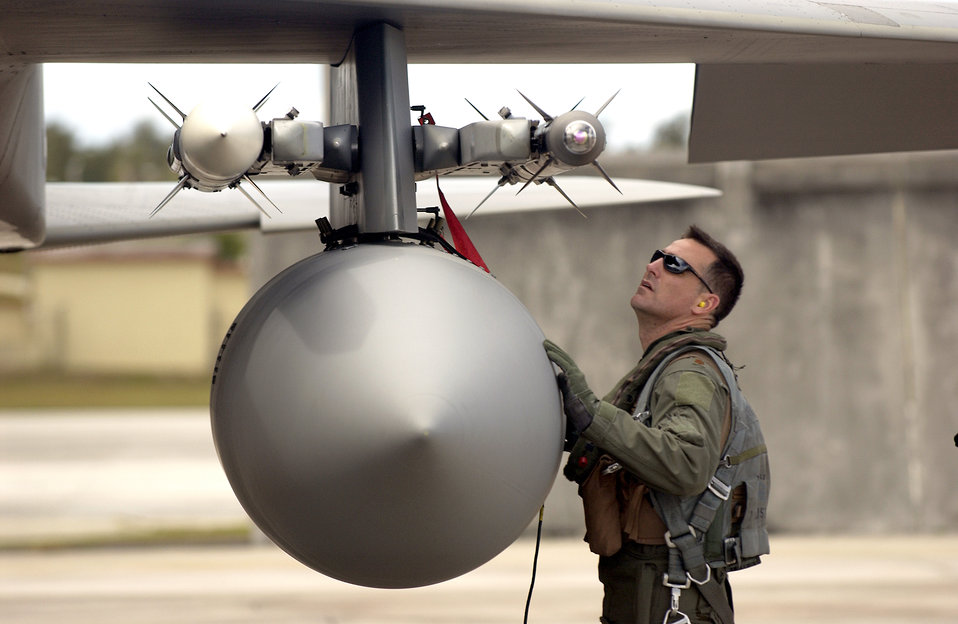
Getting ready for a flight

Maj. Paul Johnson pre-flights his F-15 Eagle before a training sortie during Exercise Valiant Shield at Andersen Air Force Base, Guam, on Thursday, June 22. The exercise focused on integrated joint training and interoperability among U.S. military forces while responding to a range of mission scenarios. Major Johnson is with the 44th Fighter Squadron at Kadena Air Base, Japan.